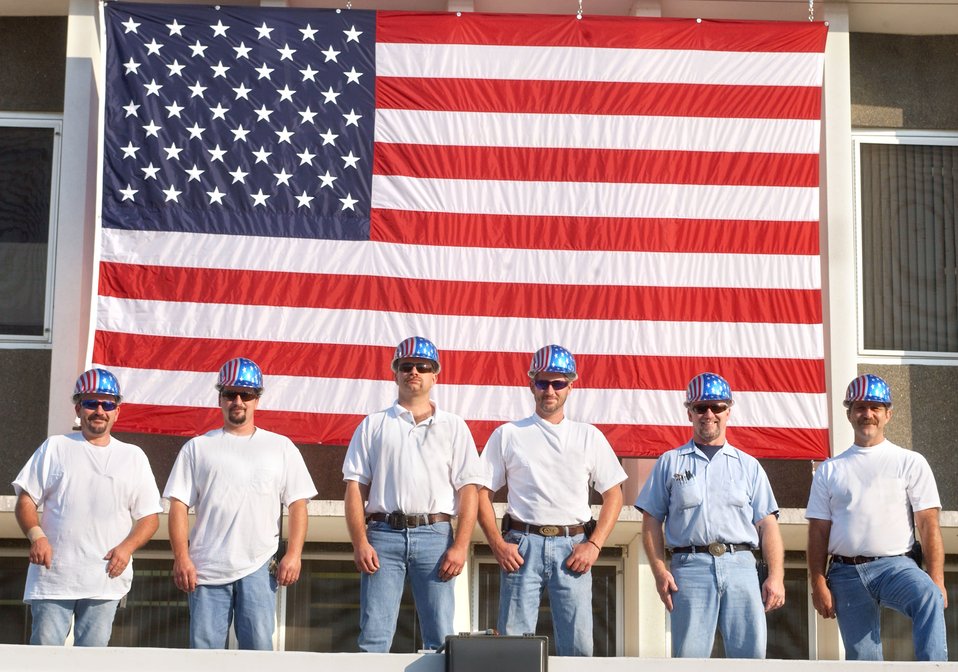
September 11, Observation at Federal Building

02-211-55DOE photo by Lynn Freeny September 11, Observation at Federal Building in Oak Ridge Tennessee 2002